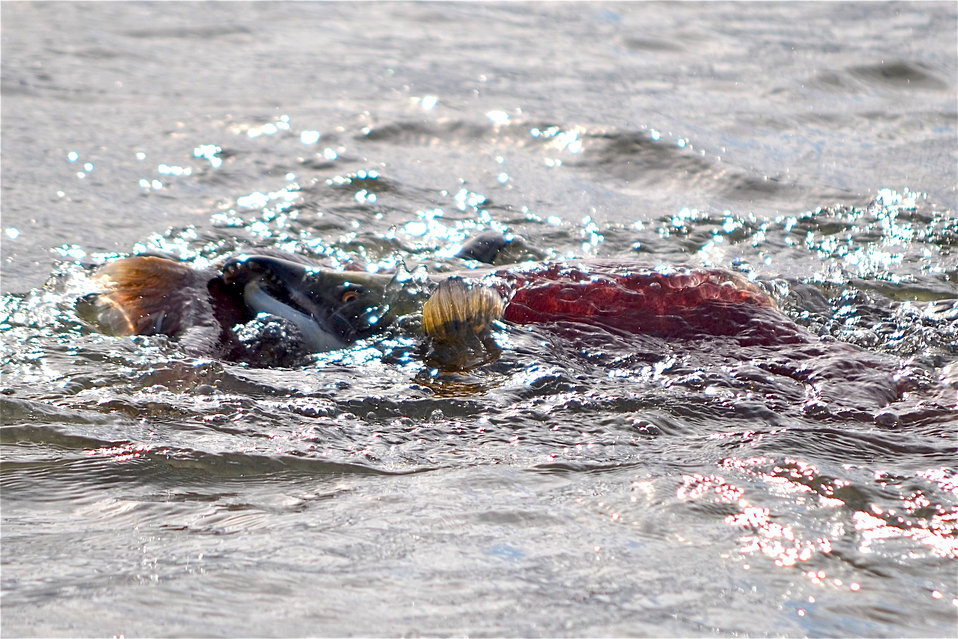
Bluebell Lake sockeyes fighting

Males fighting for mates in Bluebill Lake in Izembek National Wildlife Refuge.